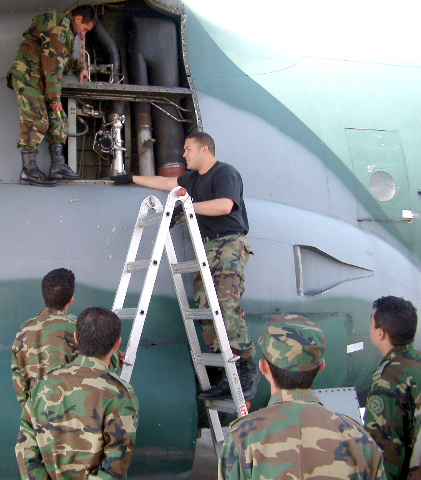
International student training

BOGOTA, Colombia -- While on a temporary assignment here, Tech. Sgt. Alwin Lopez (on ladder) explains general hydraulic principles and inspection techniques to Colombian military students. Sergeant Lopez is a a C-130 Hercules crew chief from the 653rd Combat Logistics Support Squadron at Robins Air Force Base, Ga. He is in Columbia supporting the Air Force Security Assistance Training Squadron program.